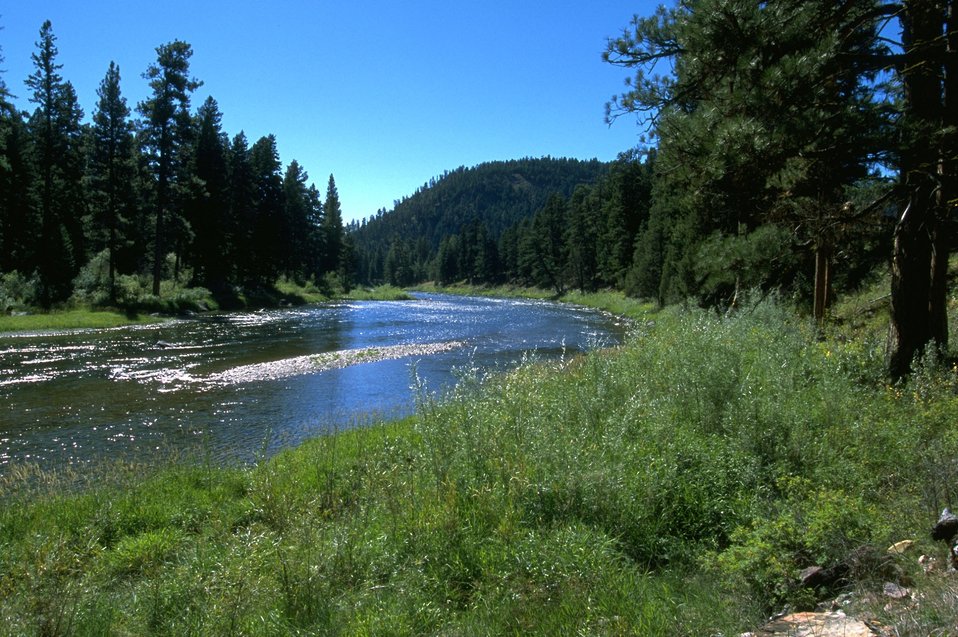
Blackfoot River